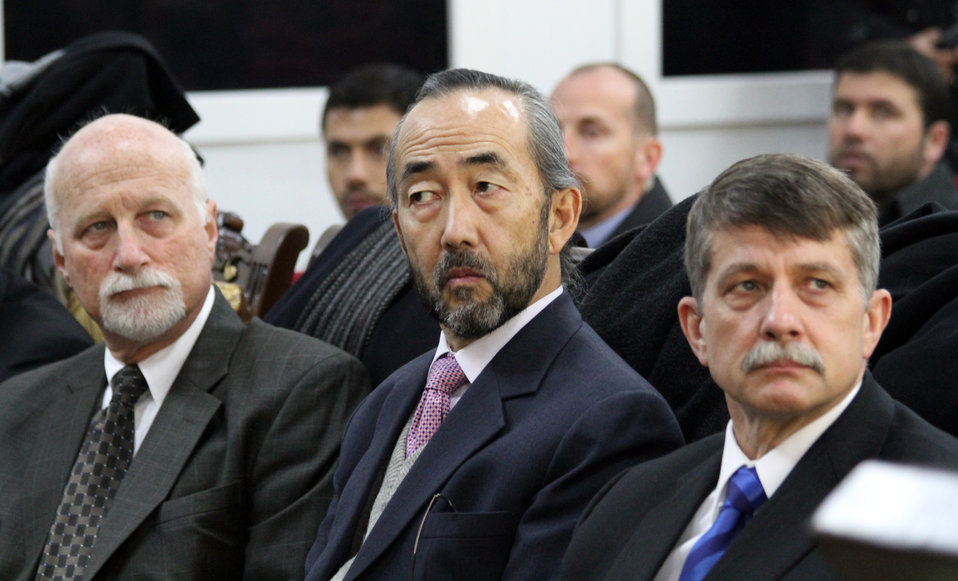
Afghanistan Final National Round of the 2013 Philip C.Jessup International Law Moot Court Competition